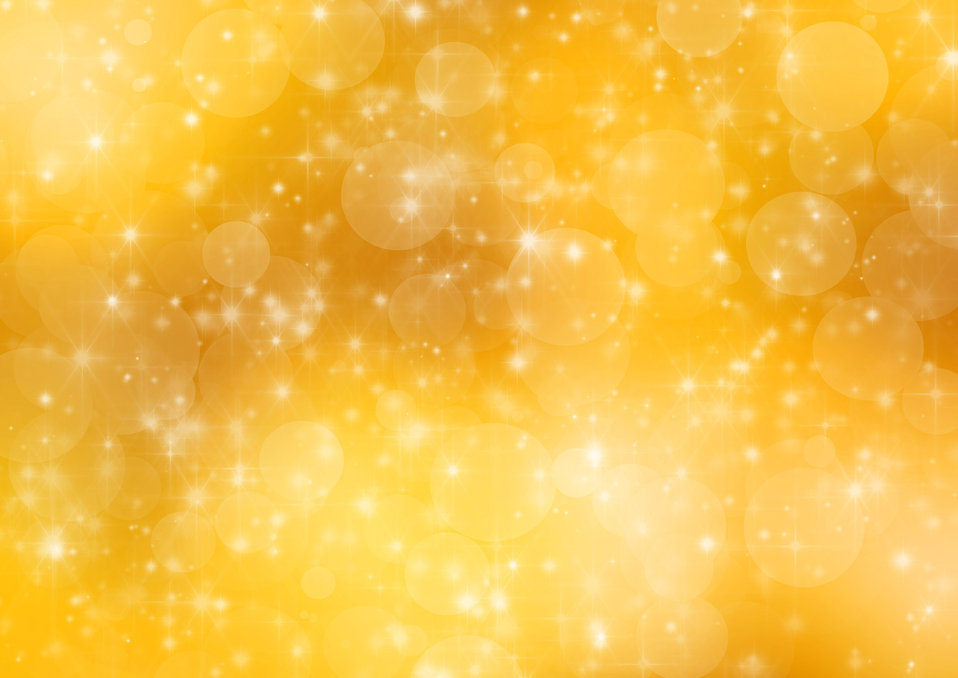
Golden christmas background

Golden christmas bokeh and stars background.